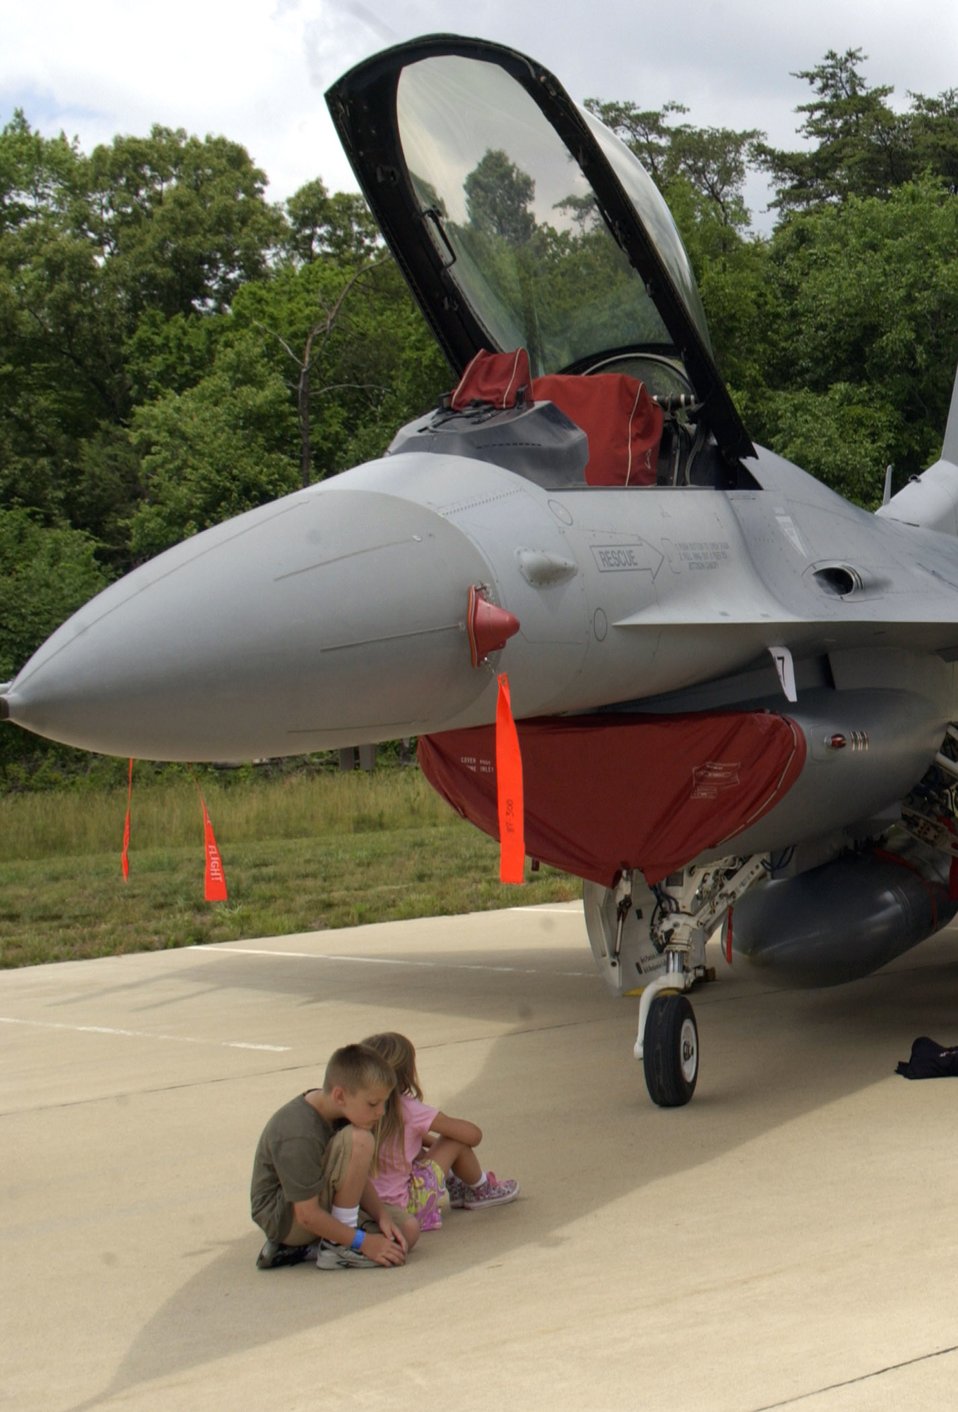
National Air and Space Museum family day wows visitors

Two visitors relax in the shade of an F-16 Fighting Falcon on display during the